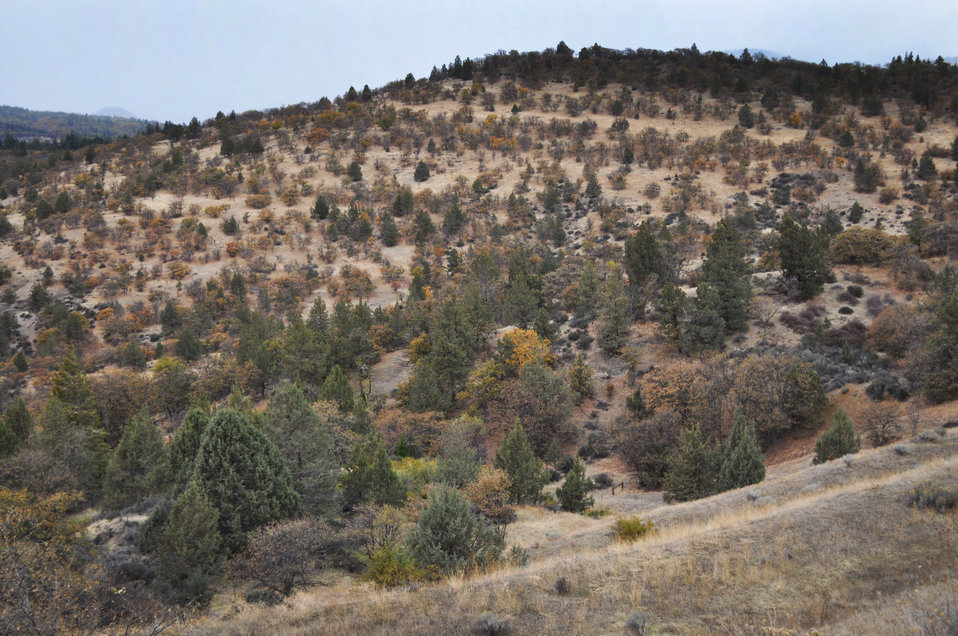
Oak Woodland Hillside, Colestin Valley